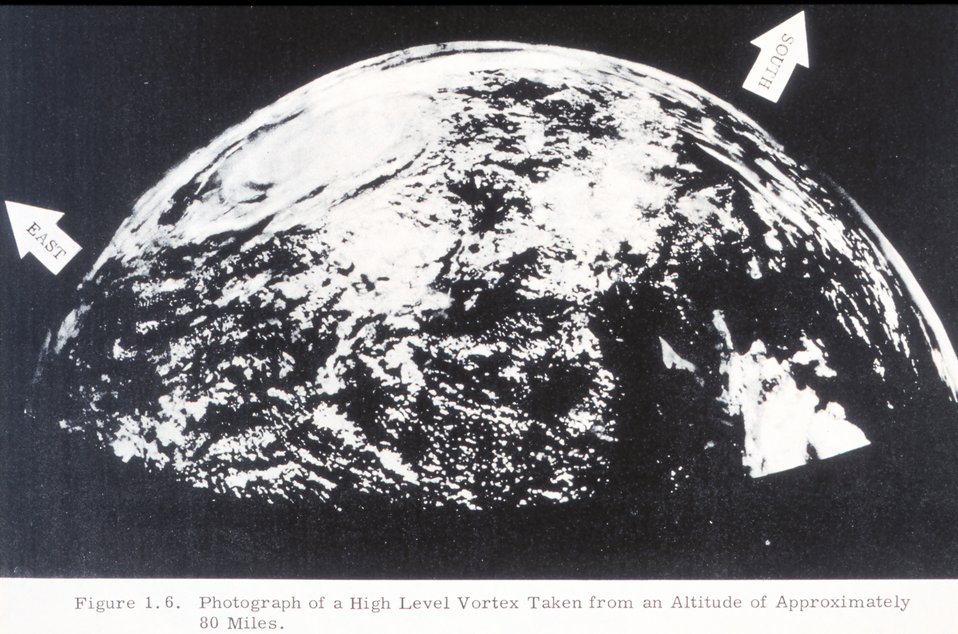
View of tropical cyclone centered near Del Rio, Texas. This picture showed the promise of satellite monitoring of weather. The picture was made from movie cameras mounted in a Navy Aerobee rocket fired from White Sands Proving Ground. 'Operational Use of Weather Satellites', U. S. Navy Research Facility, Norfolk, Virginia, March 1960.